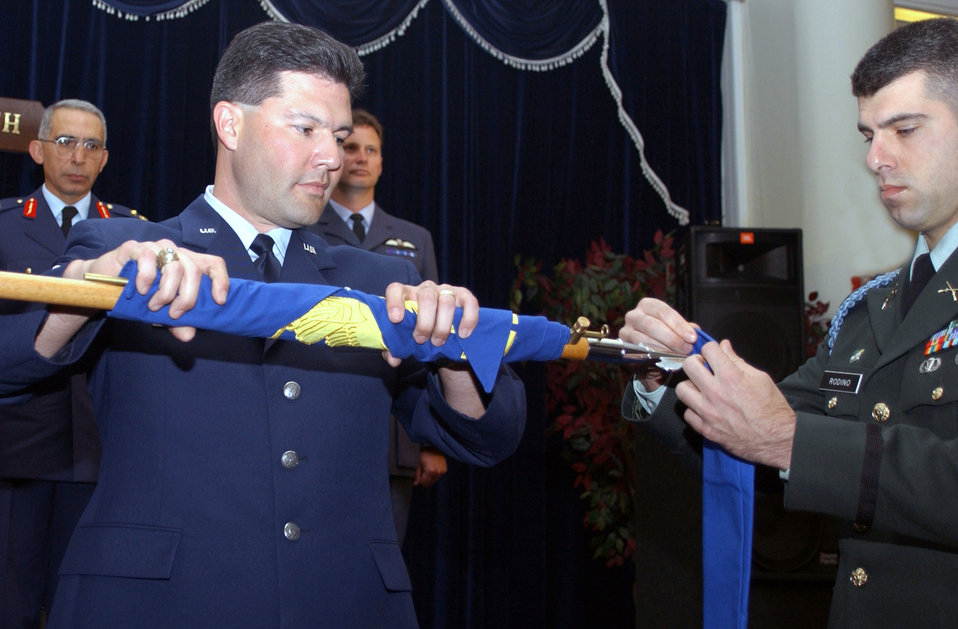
End of an era

INCIRLIK AIR BASE, Turkey -- Master Sgt. Roy T. Blanco, the 39th Mission Support Squadron first sergeant, and Army 1st Lt. Eric Rodino, Combined Task Force chief of staff executive officer, case the CTF/Operation Northern Watch guidon during an inactivation ceremony here May 1.